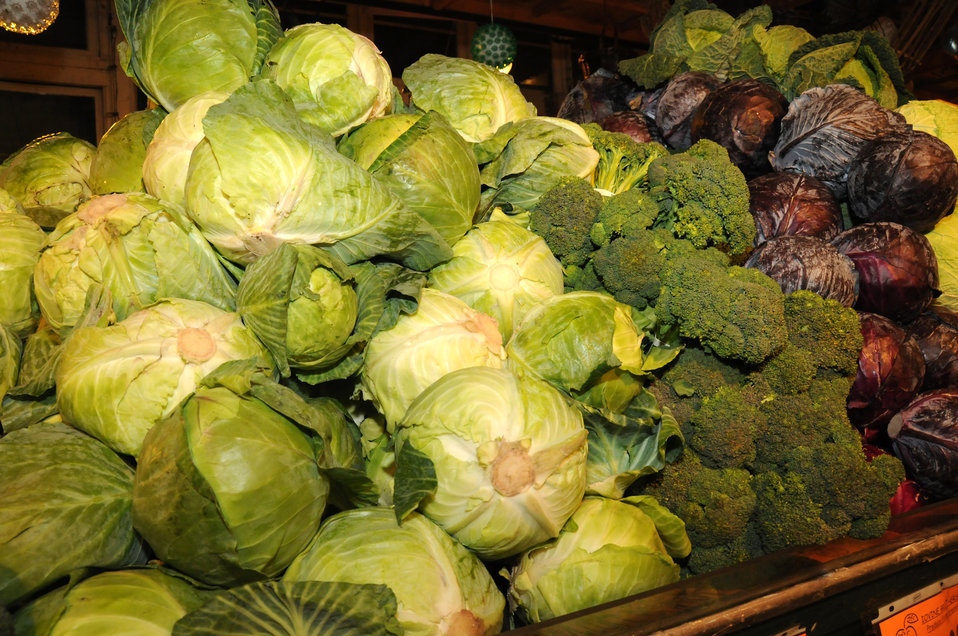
The Reading Terminal Market offers produce fresh from the field to the people of Philadelphia, PA on April 3, 2009. There are Amish specialties, fruits, vegetables, meats, seafood, and poultry. Reading Terminal Market opened for business in 1892 with approximately 78,000 square feet and almost 800 spaces for vendors. The Market was revitalized in the 1990’s and today is still the gastronomic bazaar that its original planners had envisioned. Many of the historic Market stands survived the reconstruction and are once again filled with local produce, fresh eggs, milk, meats, poultry, seafood, handmade crafts, jewelry, and clothing. The Market is home to more than 80 merchants, two of whom are descendants of the original stand holders from a century before.